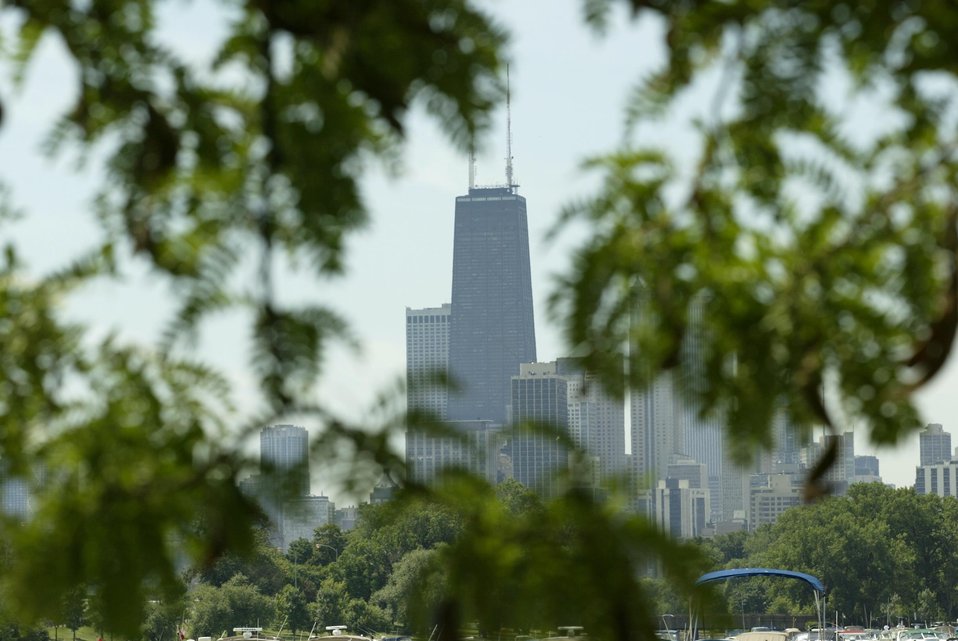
Urban Forest carbon Blog

A recent study by U.S. Forest Service scientists estimates urban forests’ trees store an estimated 708 million tons of carbon.